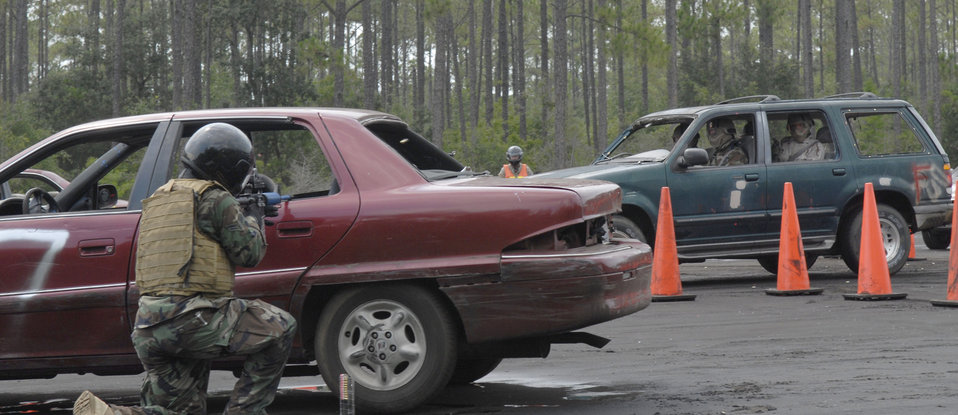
Defensive driving

Students drive through the practice course July 23, 2010, at Eglin Range, Fla., while the